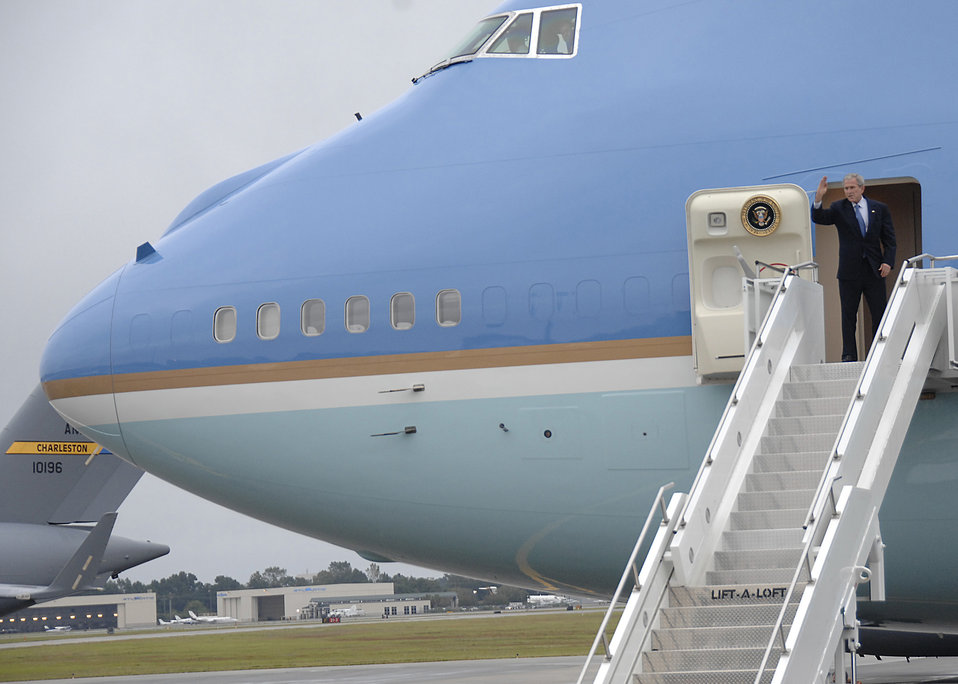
President meets with Airmen, families during S.C. visit

President George Bush waves to the crowd on the Charleston Air Force Base, S.C., flightline Oct. 10. President Bush met with more than 250 Team Charleston members en route to an event at Kiawah Island, S.C.